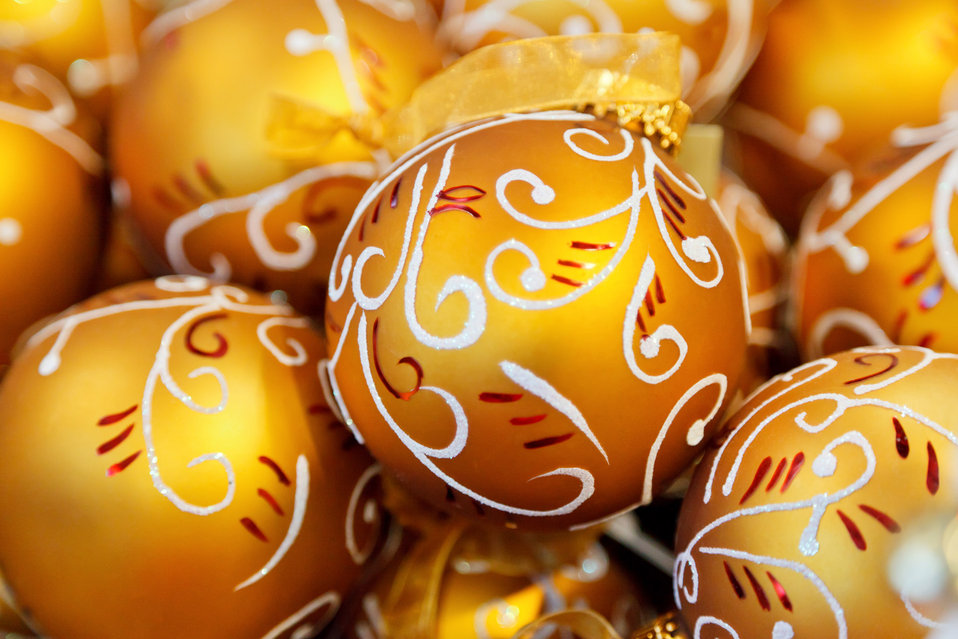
Orange christmas balls

Orange christmas bauble decoration.